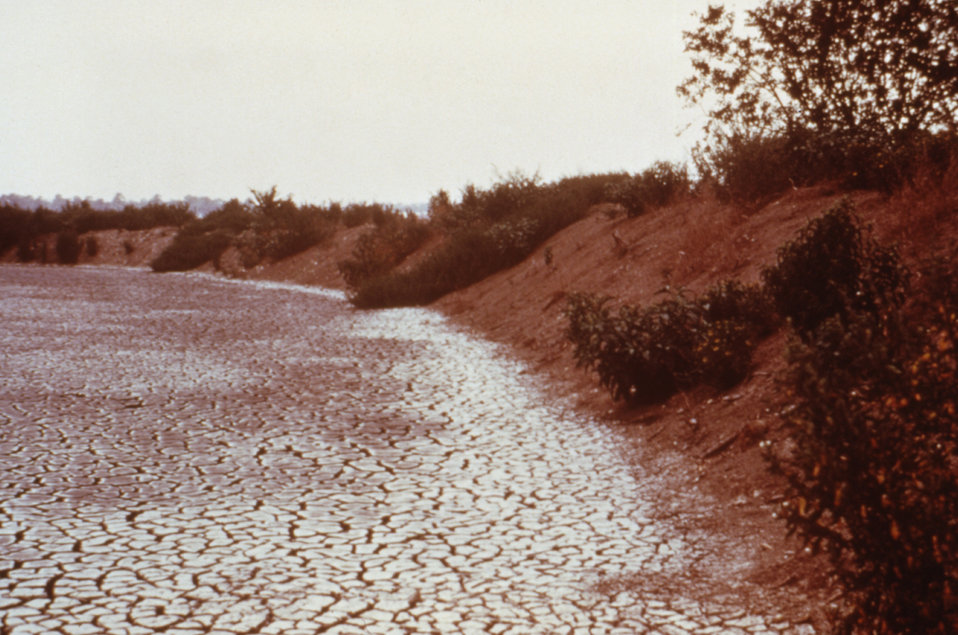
This is a 1976 photograph showing a cracked mud bed, which was once covered by a water-filled dike.